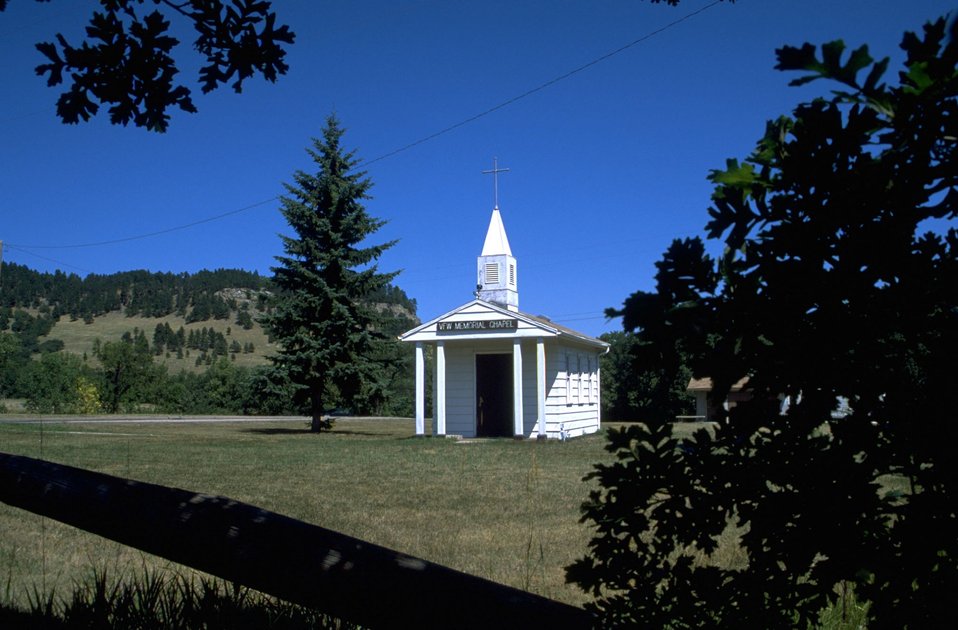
Veterans of Foreign Wars Chapel at Fort Meade